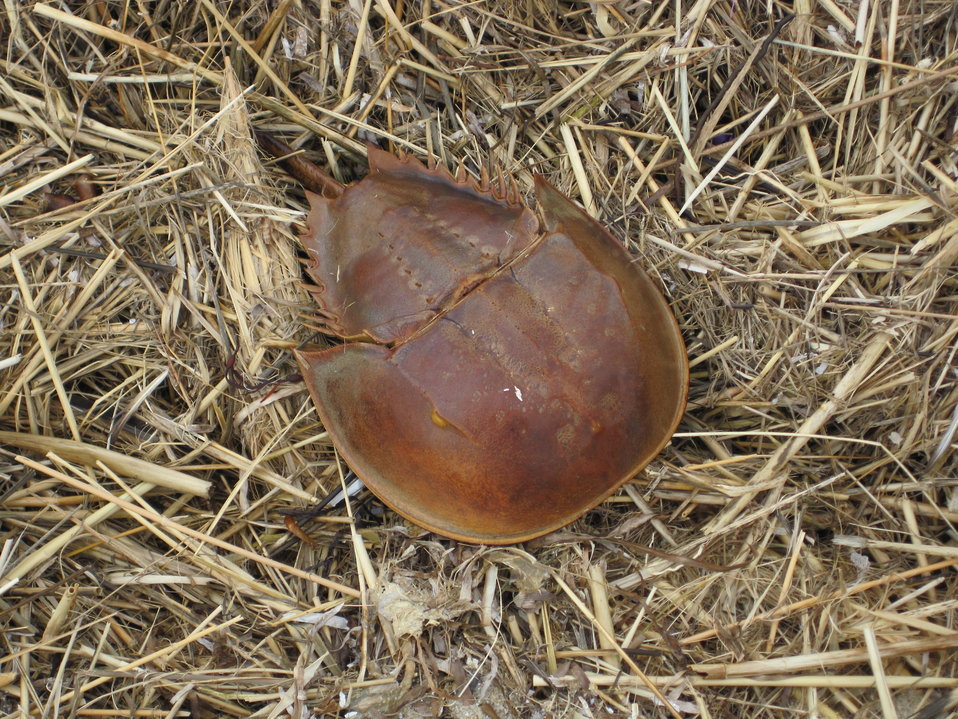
Horseshoe crab shell on the beach at Monomoy

A stroll along the beach offers many chances to spot beautiful shells such as this.

Credit: Keith Shannon/USFWS

Monomoy National Wildlife Refuge is part of the Eastern Massachusetts National Wildlife Refuge Complex.